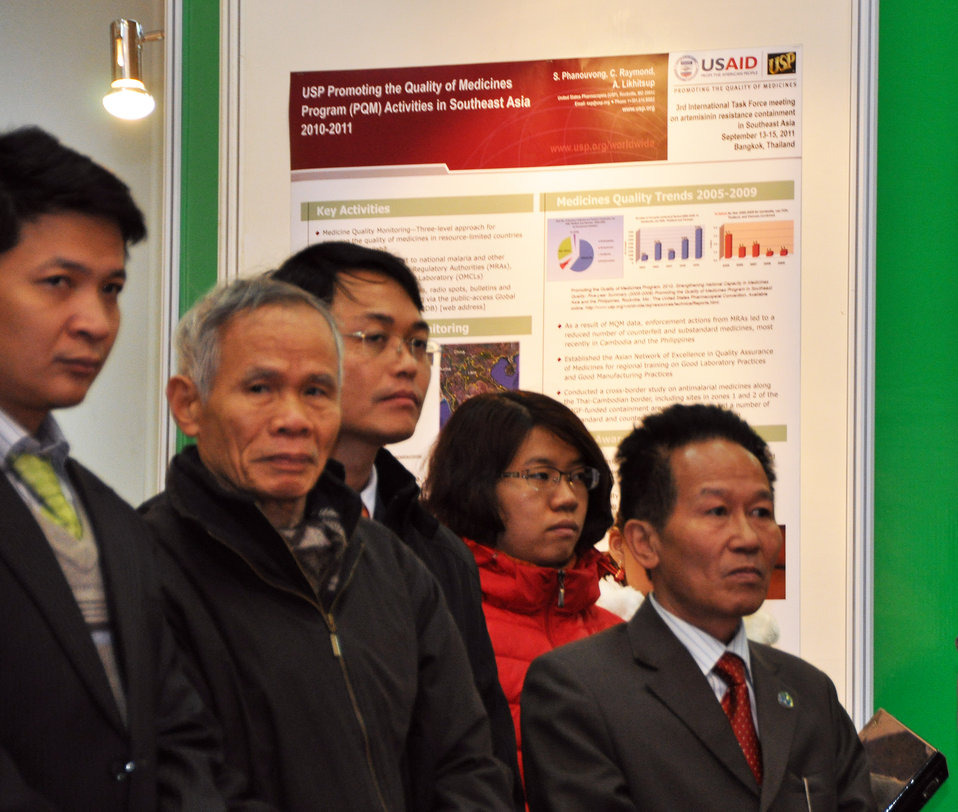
U.S. Ambassador David Shear opens safe medicine exhibition in Hanoi

Safe Medicine Exhibition